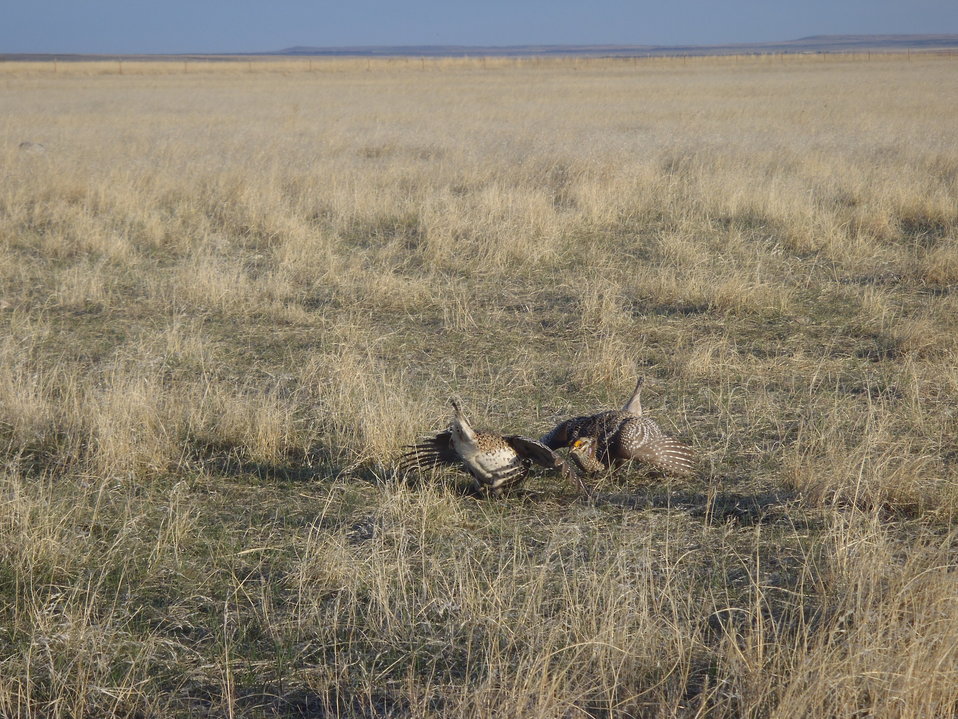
Sharp-tailed Grouse

The mating routine of sharp-tailed grouse involves males displaying communally at a traditional site (one used year after year). This site is known as a “lek.” Males compete for mates by performing a ritualized dance in conjunction with calling (often a booming sound) and inflating purplish air sacs along their necks. Females approach the edge of the lek, observe and eventually select a dance participant to mate with.